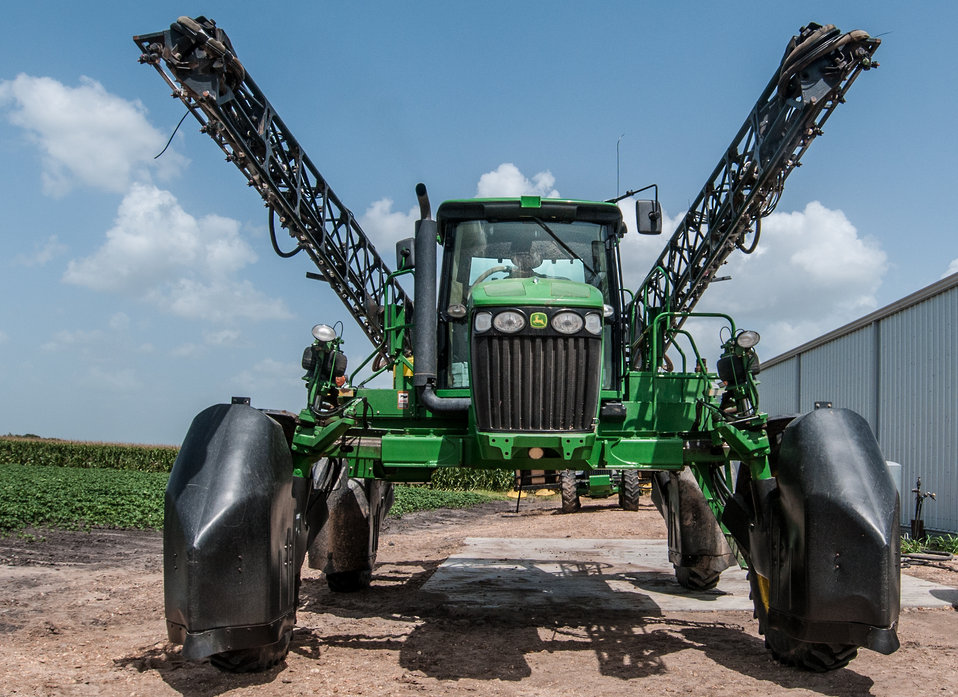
Josh Marek performs an operational check of a sprayer before heading to a local farm in Wharton County, TX on Jun. 20, 2013. Marek is a new small farm owner with 700 acres of corn and cotton that he started in 2007. Marek has been working on the farm since he was 15 and supports his wife Terry and 1-year old son.